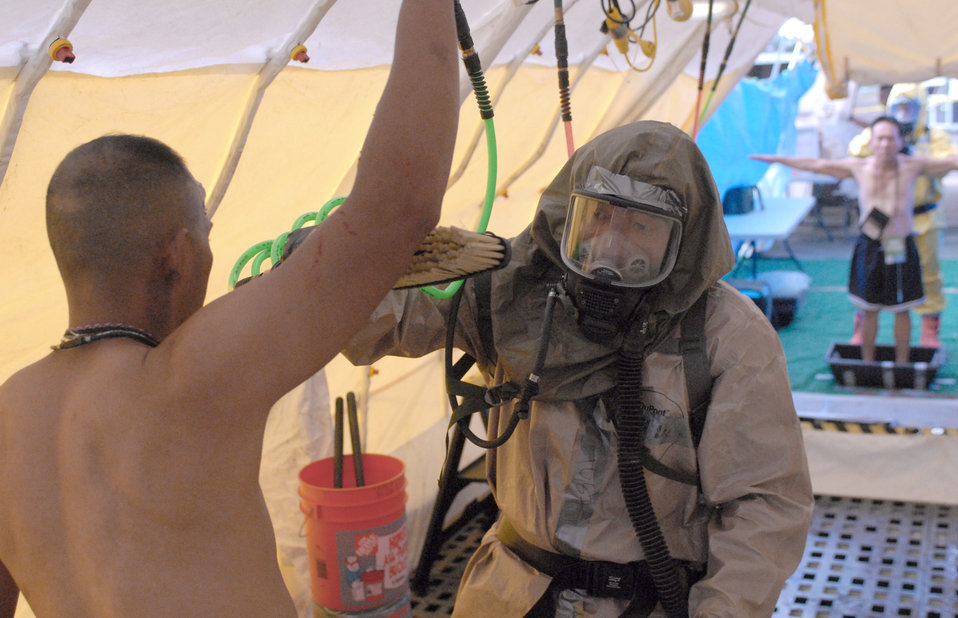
Hawaii National Guard all-hazards response team earns validation

Hawaii National Guardsmen assist